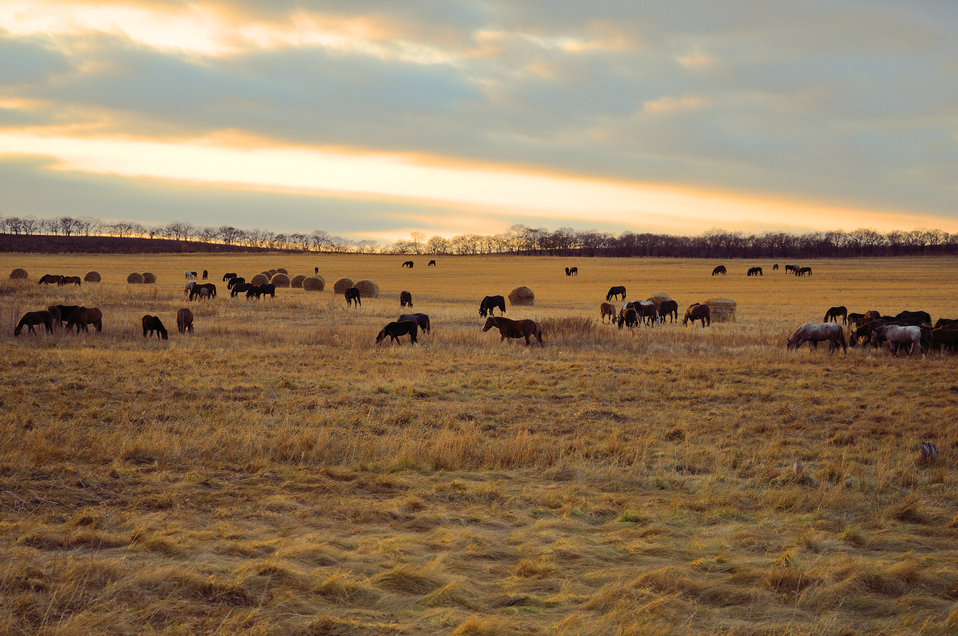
Horses in the field

Herd of horses grazing in a field.